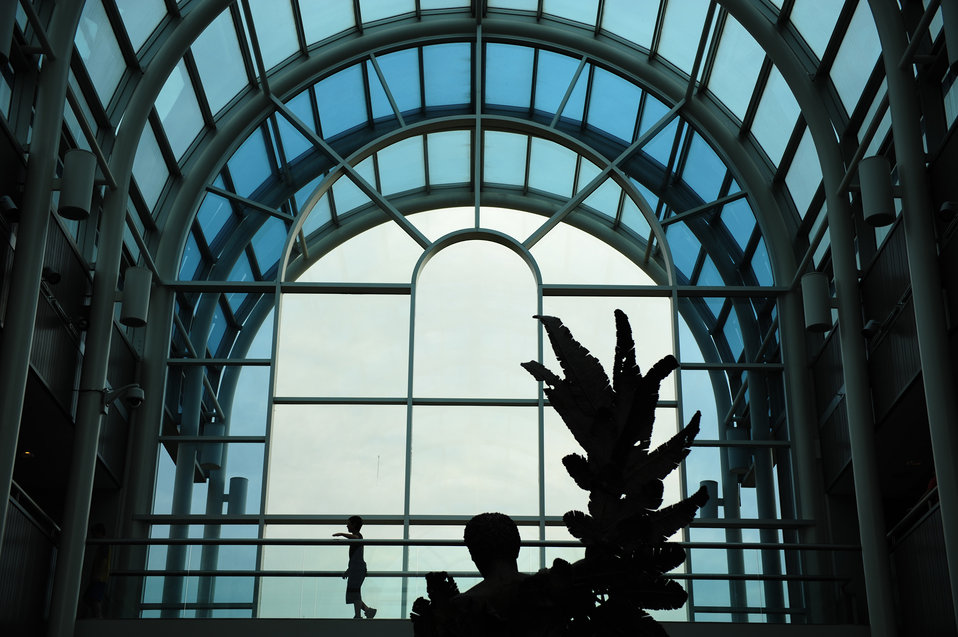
68th Doolittle Raiders Reunion

A boy walks along the skywalk at the National Museum of the U.S. Air Force at Wright Patterson Air Force Base, Ohio, April 16, 2010. The museum is hosting the Doolittle Raiders' 68th reunion at Wright Patterson Air Force Base, Ohio. The event commemorates the anniversary of the Doolittle Tokyo Raid. On April 18, 1942, U.S. Army Air Forces Lt. Col. Jimmy Doolittle's squadron of 16 B-25s bombed targets over Japan in response to the Japanese attack on Pearl Harbor.